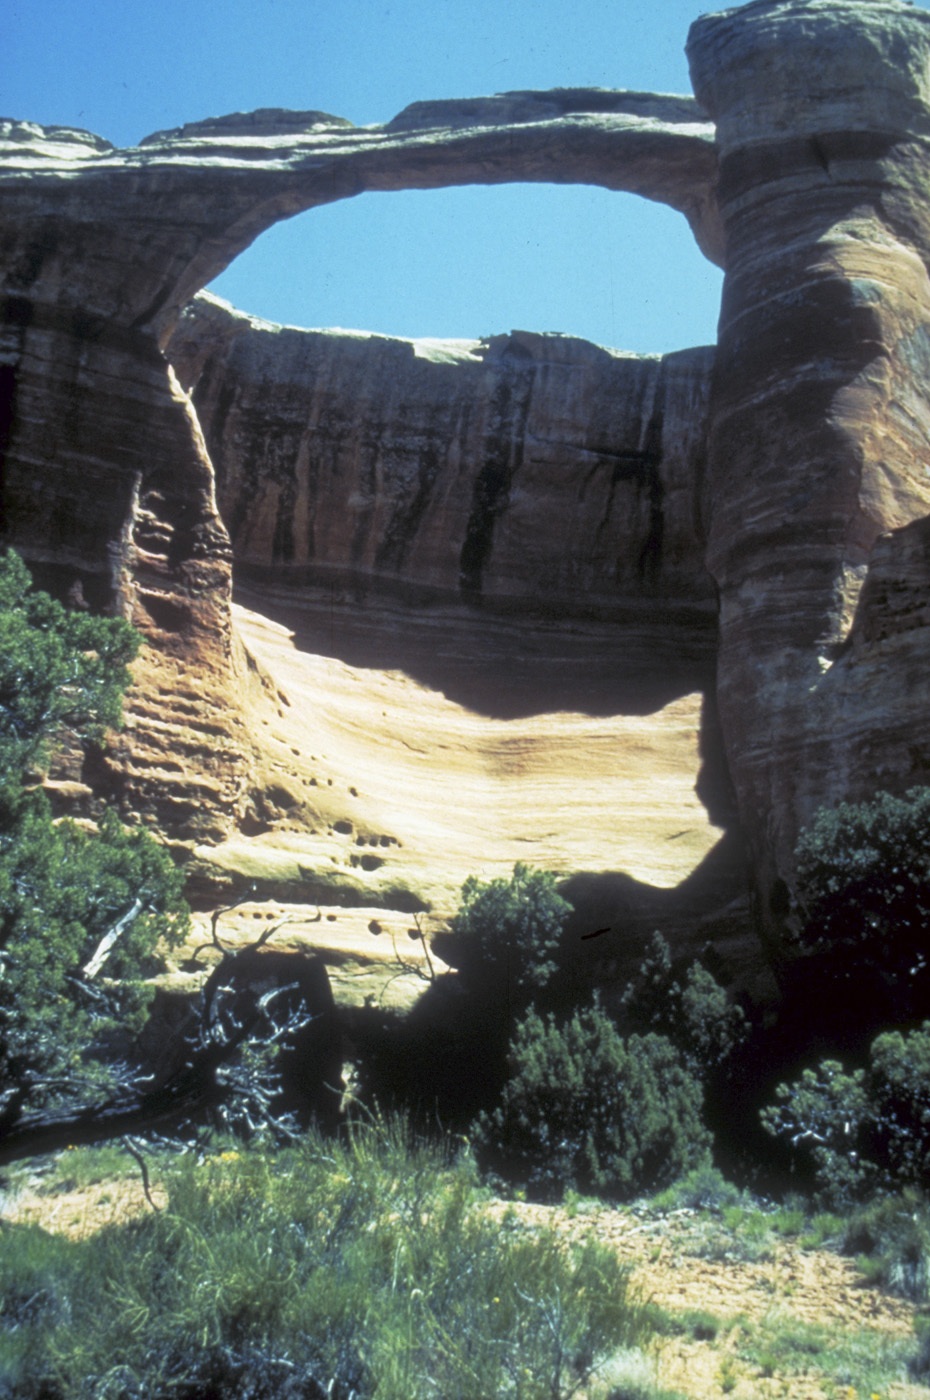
Arch in Rattlesnake Canyon in the Colorado Canyons National Conservation Area.